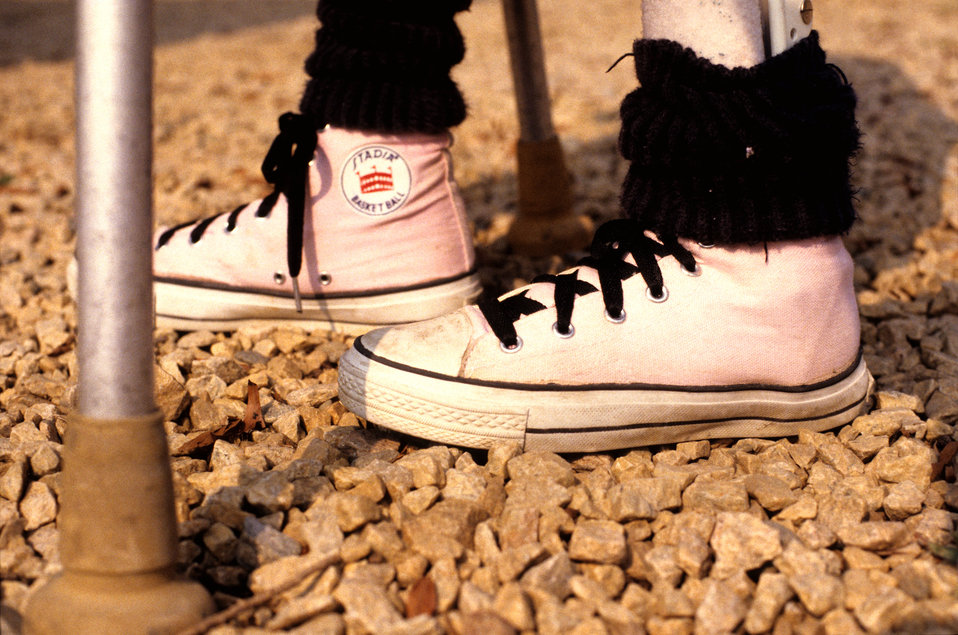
This 1994 image depicted a person's ankles, and sneaker-clad feet standing atop a loose pebbled pathway. This individual was also using of a walker, the feet of which were also interacting with this precarious surface. The use of loose stone, gravel, or pebbles to cover a walkway is an improper use of these materials, for it showed that consideration had not been paid as to which user groups would be using this pathway. There is an inherent danger, evidenced by this photograph, to those who are mobility-challenged, and rely upon mobility aids such as crutches, walkers, or wheelchairs. When constructing pathways, all user groups must be taken into account, not only those able to walk unimpaired, but all types of mobility-challenged individuals who'd be using wheelchairs, canes, and crutches, which is a philosophy implemented by the Center for Universal Design, (CUD).